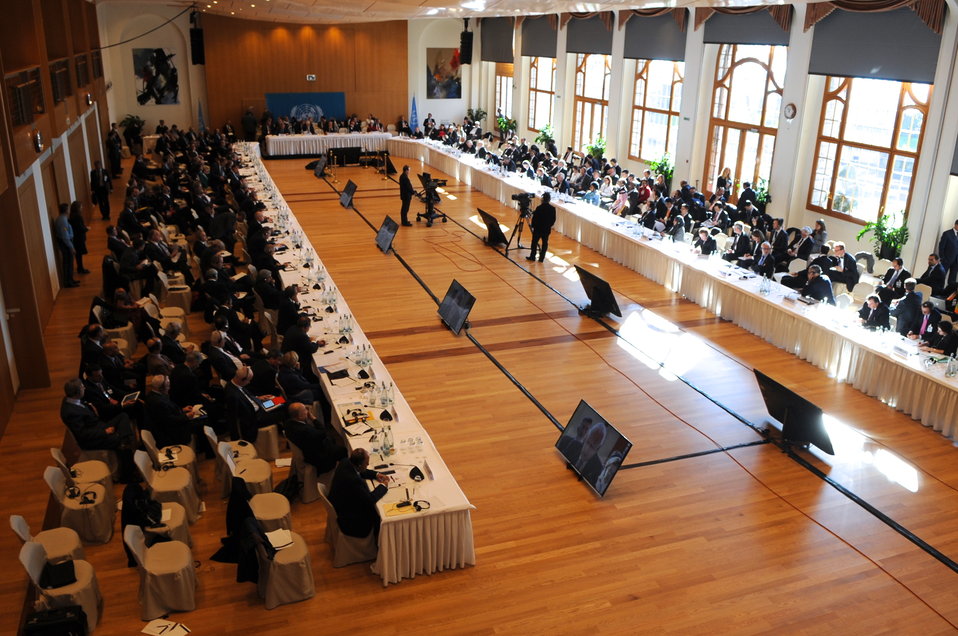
Geneva II Conference Gets Underway in Switzerland

United Nations Secretary-General Ban Ki-moon convened the Geneva II conference in Montreux, Switzerland, on January 22, 2014.